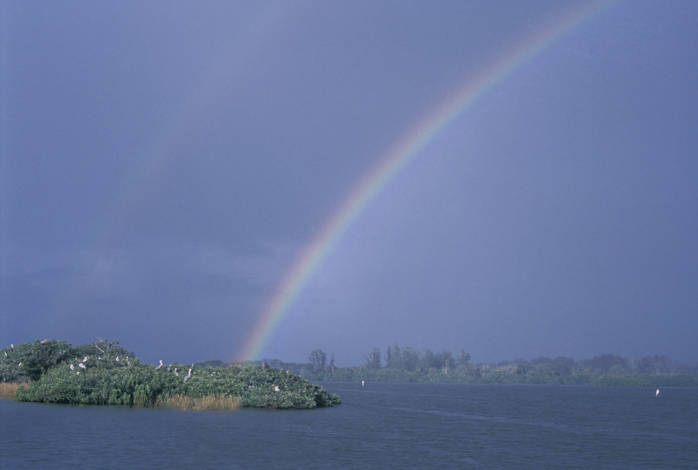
rainbow over Pelican Island

Pelican Island National Wildlife Refuge, FL